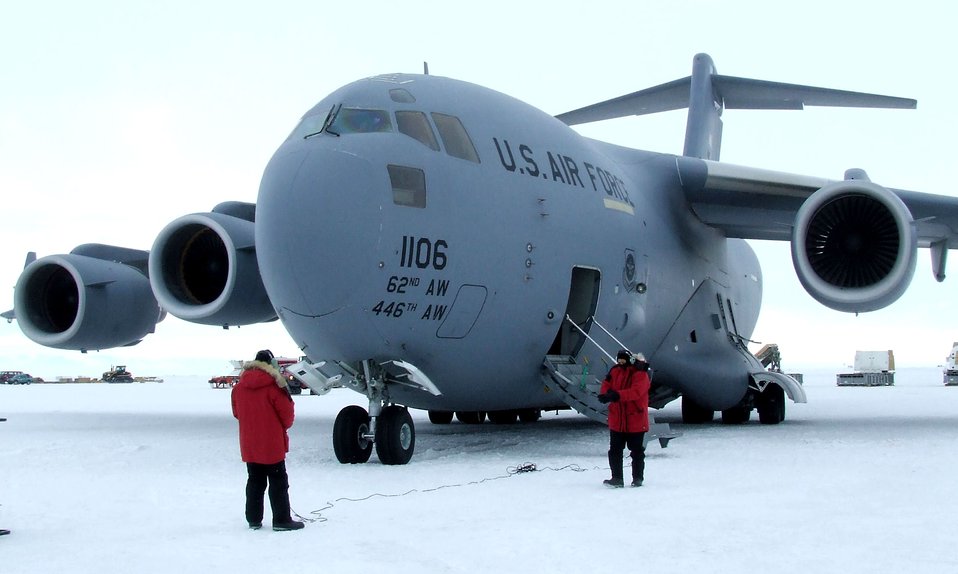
Deep Freeze mission ends record-setting season

Senior Airman Kory Williams, left, and Senior Master Sgt. David Stutts assess the C-17 Globemaster III's condition after landing on the ice runway Nov. 16 at McMurdo Station, Antarctica. The jet, from McChord Air Force Base, Wash., shuttled supplies, equipment and personnel for Operation Deep Freeze. Airman Williams is from the 8th Airlift Squadron and Sergeant Stutts is from the 313th AS.